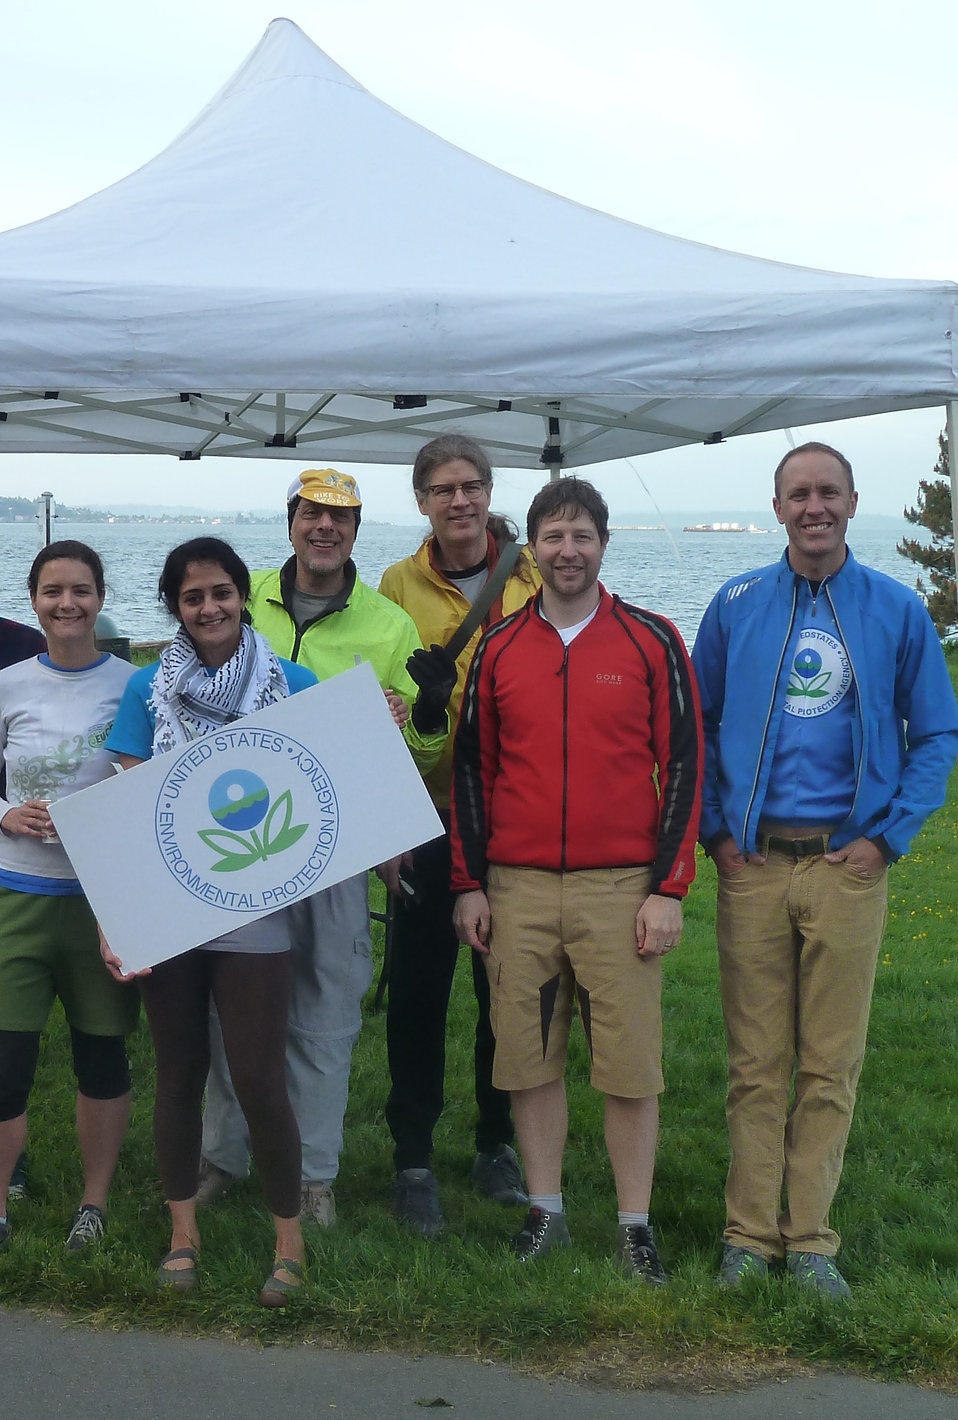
EPA Seattle Bike-To-Work Day 2014

EPA Pacific Northwest Region bike commute station volunteers (left to right): Annie Christopher, Hanady Kader, Jonathan Freedman, John Keenan, Rob Elleman, and Erik Peterson.